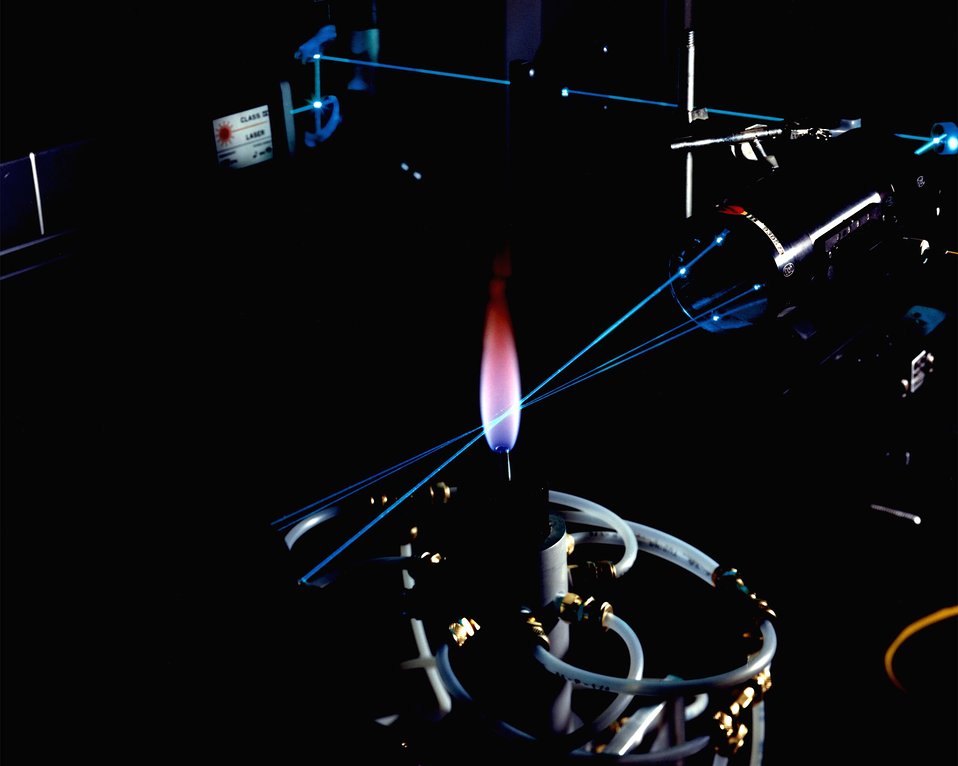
LASER DOPPLER VELOCIMETRY (LDV) USED TO MEASURE VELOCITIES IN A DIFFUSION FLAME.

SCIENTISTS USE ADVANCED LASERS AND COMPUTERS AT THE 50,000 SQUARE FOOT, FOUR-BUILDING COMBUSTION RESEARCH FACILITY TO STUDY EXACTLY HOW AND WHY FUELS BURN. IN THE LABORATORY BUILDING, SPECIAL LASER SYSTEMS WITH BEAMS ARE DISTRIBUTED TO 14 INDIVIDUAL LABORATORIES. EACH LABORATORY IS SERVED BY A MINICOMPUTER WHICH IS CONNECTED TO A CENTRAL DATA SYSTEM. IN ADDITION TO BENCH-TOP FLAME STUDIES, THE FACILITY HOUSES SEVERAL MAJOR COMBUSTION EXPERIMENT LABS, INCLUDING FIVE OPTICALLY PORTED RESEARCH ENGINES, A COMPUTER-CONTROL- LED COMBUSTION BOMB, AND LOW-PRESSURE FLAME, COAL FLAME, AND TURBULENT FLAME LABORATORIES. THESE STUDIES COULD LEAD TO THE DESIGN OF HEAT ENGINES AND ENERGY SYSTEMS THAT BURN FUEL MORE EFFICIENTLY WHILE CREATING LESS POLLUTION.